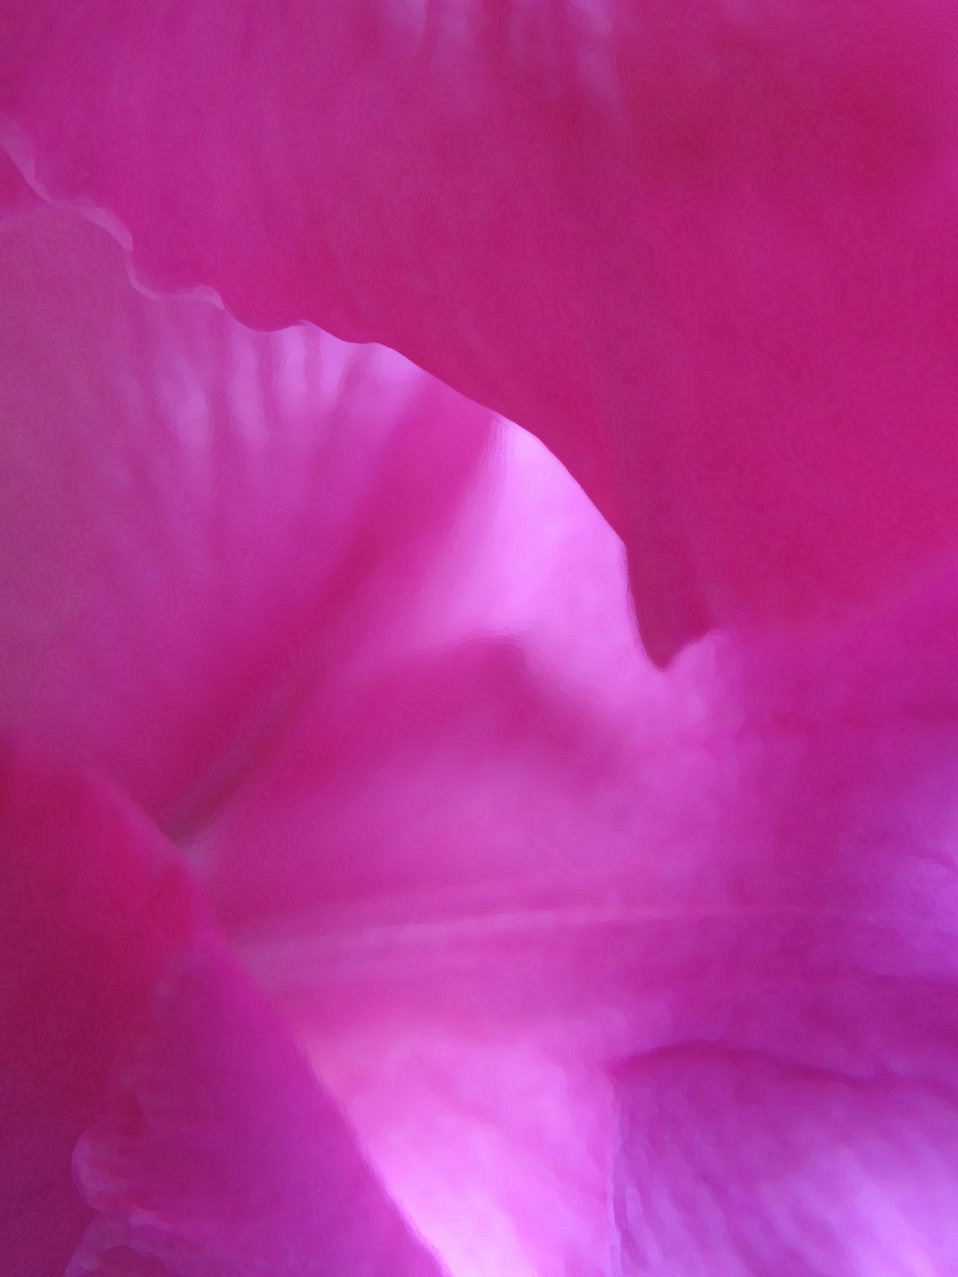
Gladiolus

A picture of a gladiolus.